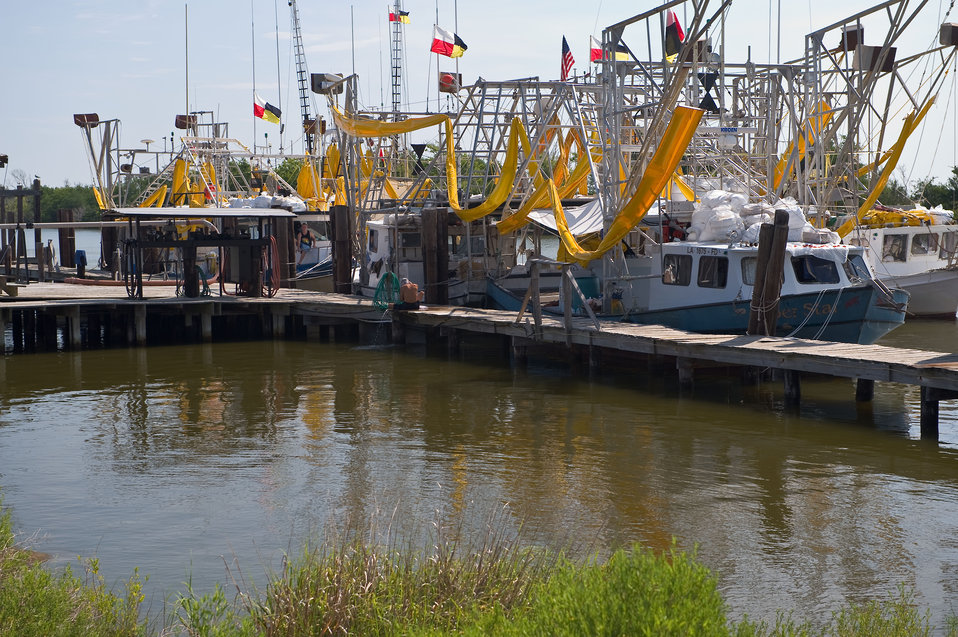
August 7, Shrimp boats near Leeville, La outfitted with oil boom

Over 1,400 privately owned vessels and their crews have devoted their operations to the oil spill response, working for BP as Vessels of Opportunity. Shrimp boats near Leeville, La.